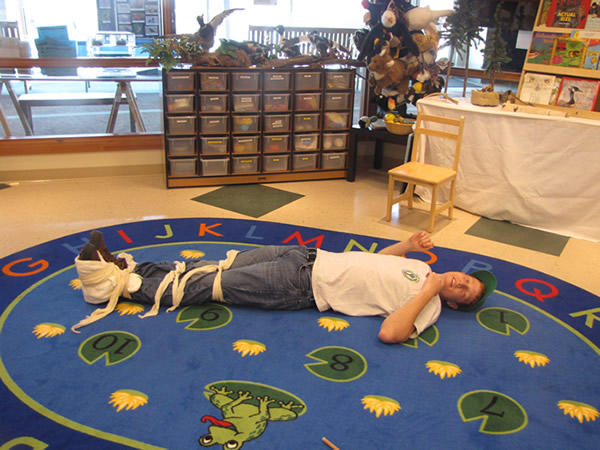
First Aid Certification

Youth Conservation Corps (YCC) learns and particiaptes in First Aid certification training presented by Bear River Migratory Bird Refuge law enforcement officer, Greg Mullin.